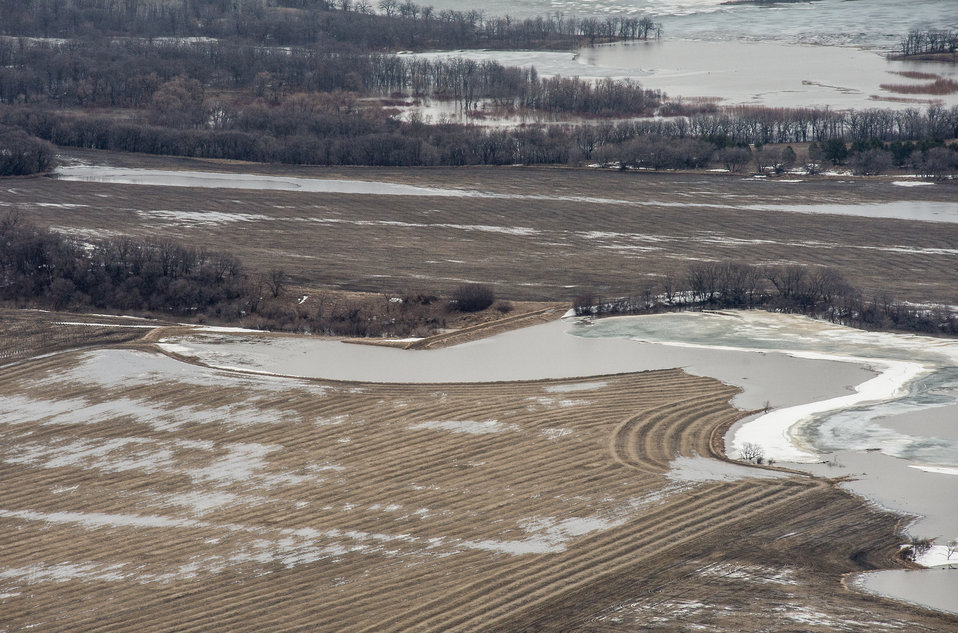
Flooding of Morris Dam, in Pembina County, ND, part of the Red River basin, on Wednesday, May 1, 2013. For information about this and other programs from the USDA Red River Basin Initiative (RRBI) please see www.mn.nrcs.usda.gov/news/features13/RRBI.html.